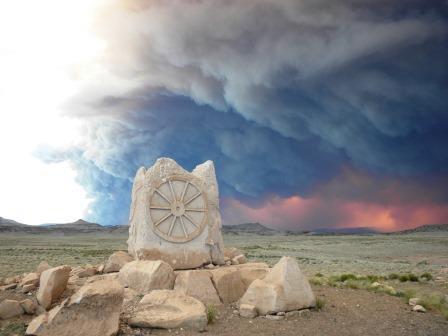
The West Fork Complex Fire is visible from the Old Spanish Trail in CO. The West Fork Complex Fire is made of four fires, Papoose Fire, East Zone of West Fork Fire, West Zone of West Fork Fire, and Windy Pass Fire. The fires located in the vicinity of Pagosa Springs, CO began on Jun. 05, 2013 by lightning strikes. The multiple fires have consumed approximately 70, 262 acres.